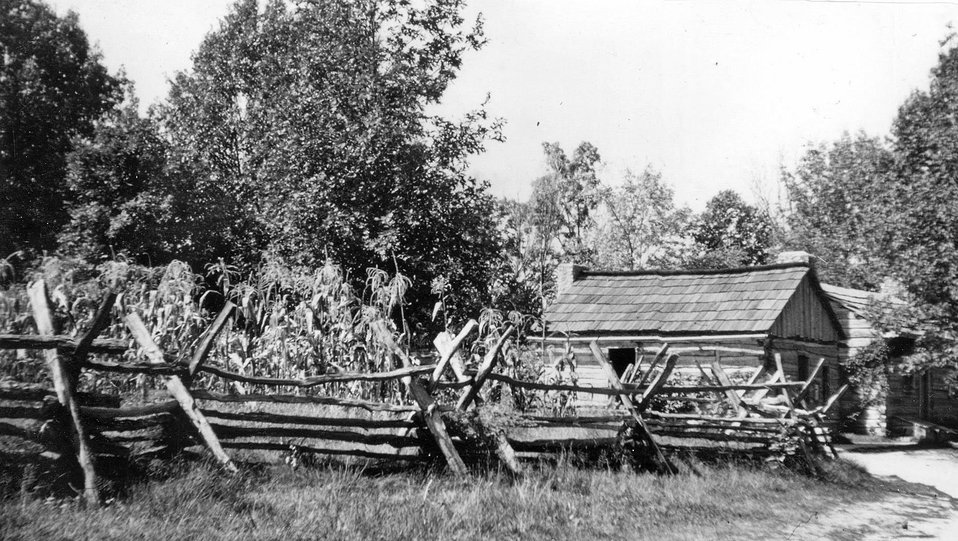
Menard County, Illinois, August 3, 1964. Example of a rail fence which the 'rail splitter', Abe Lincoln, built. Such fences which could be build withour cash costs were common in all forested pioneer areas.